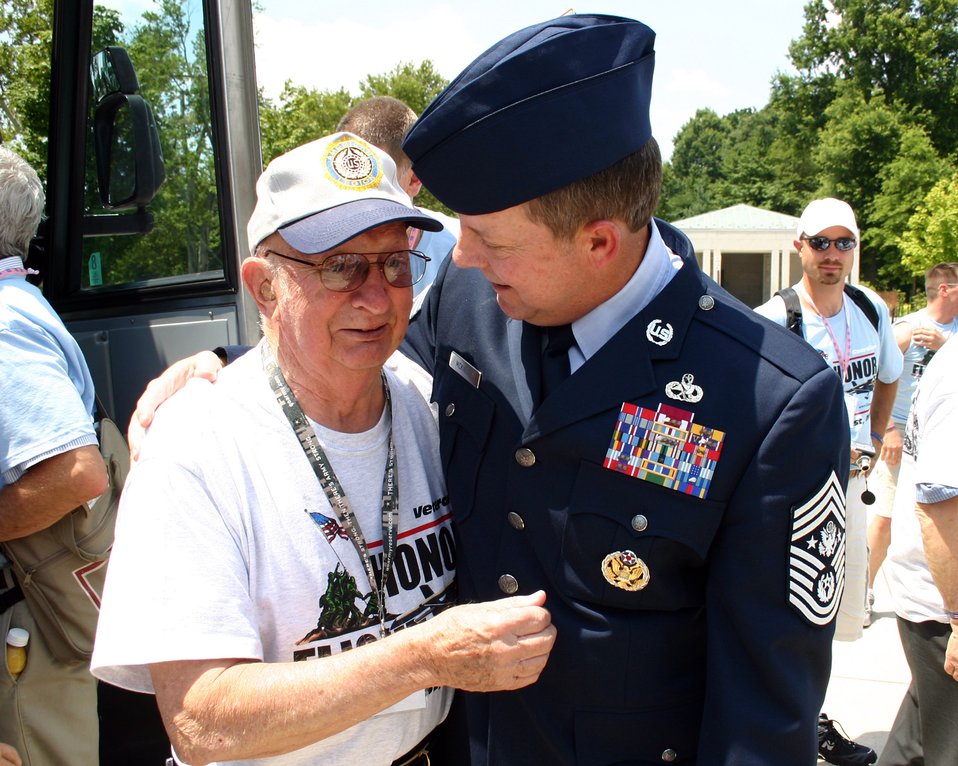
Memorial visit a family affair for top enlisted Airman, uncle

Richard McKinley (left) reacts after being surprised by a visit June 25 from his nephew, Chief Master Sgt. of the Air Force Rodney J. McKinley, during a trip to the World War II Memorial in Washington, D.C.